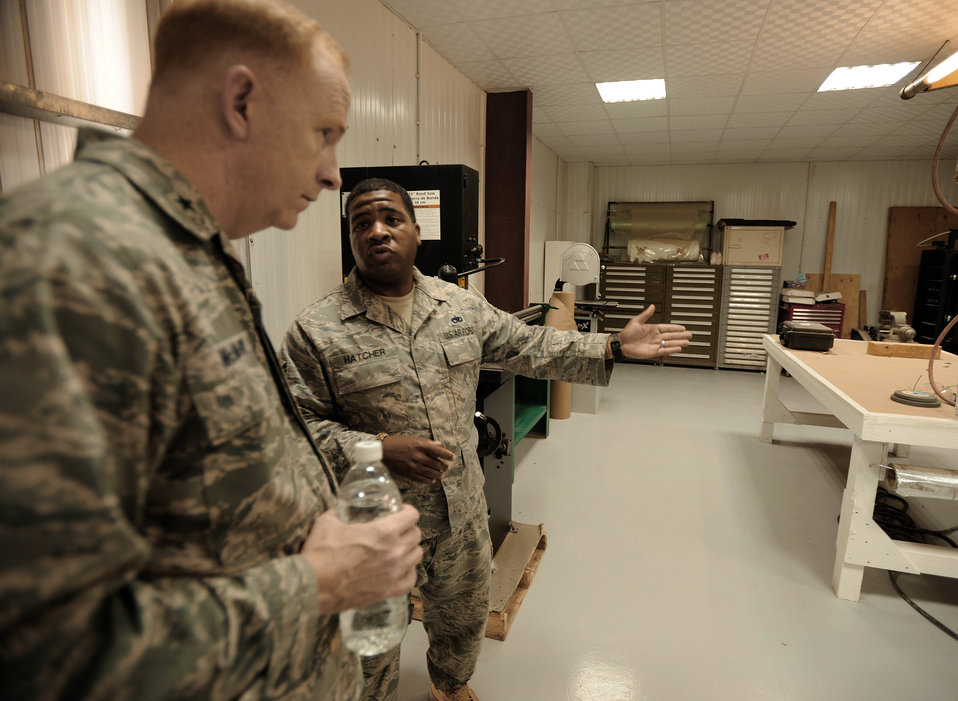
Iraqi metals tech

Tech. Sgt. Derrick Hatcher (right) showcases the new metals technology and sheet metal shop to Iraq Security Assistance Mission director Brig. Gen. Robert McMurry Jr. during a visit with 721st Air Expeditionary Advisory Squadron officials April 27, 2011, at Camp Taji, Iraq. Sergeant Hatcher is a sheet metal adviser for Iraq Training and Advisory Mission - Air.